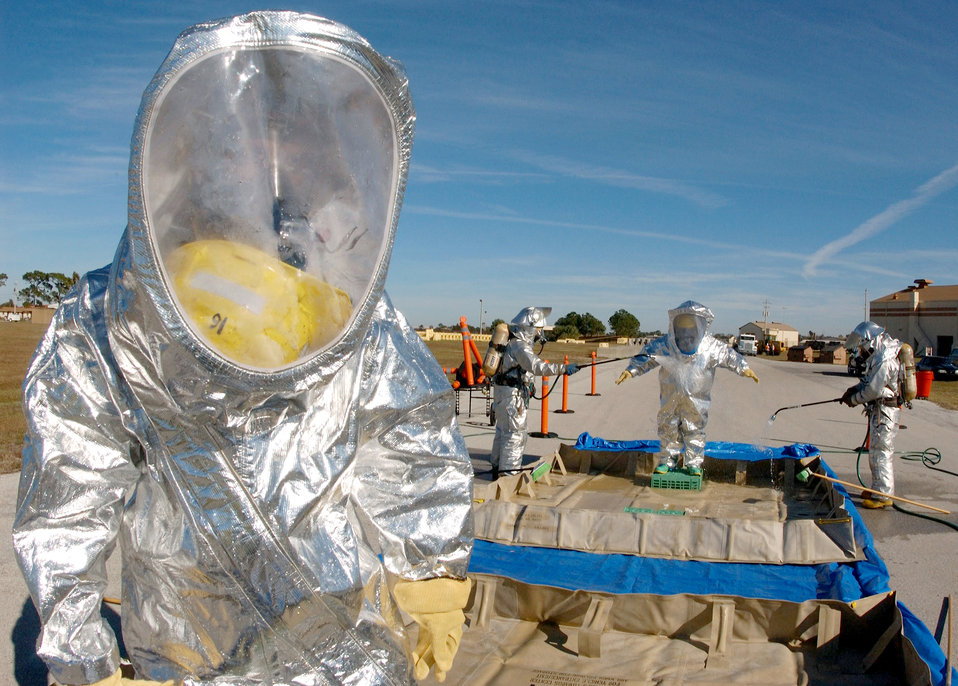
Decontamination

MACDILL AIR FORCE BASE, Fla. (AFPN) -- Senior Airman Roy Heron III waits for James Gambino to process through the first station of the decontamination line during the Emergency Management Exercise here Jan. 18. The EME prepares emergency teams for real world situations. The two men are firefighters with the 6th Civil Engineering Squadron.